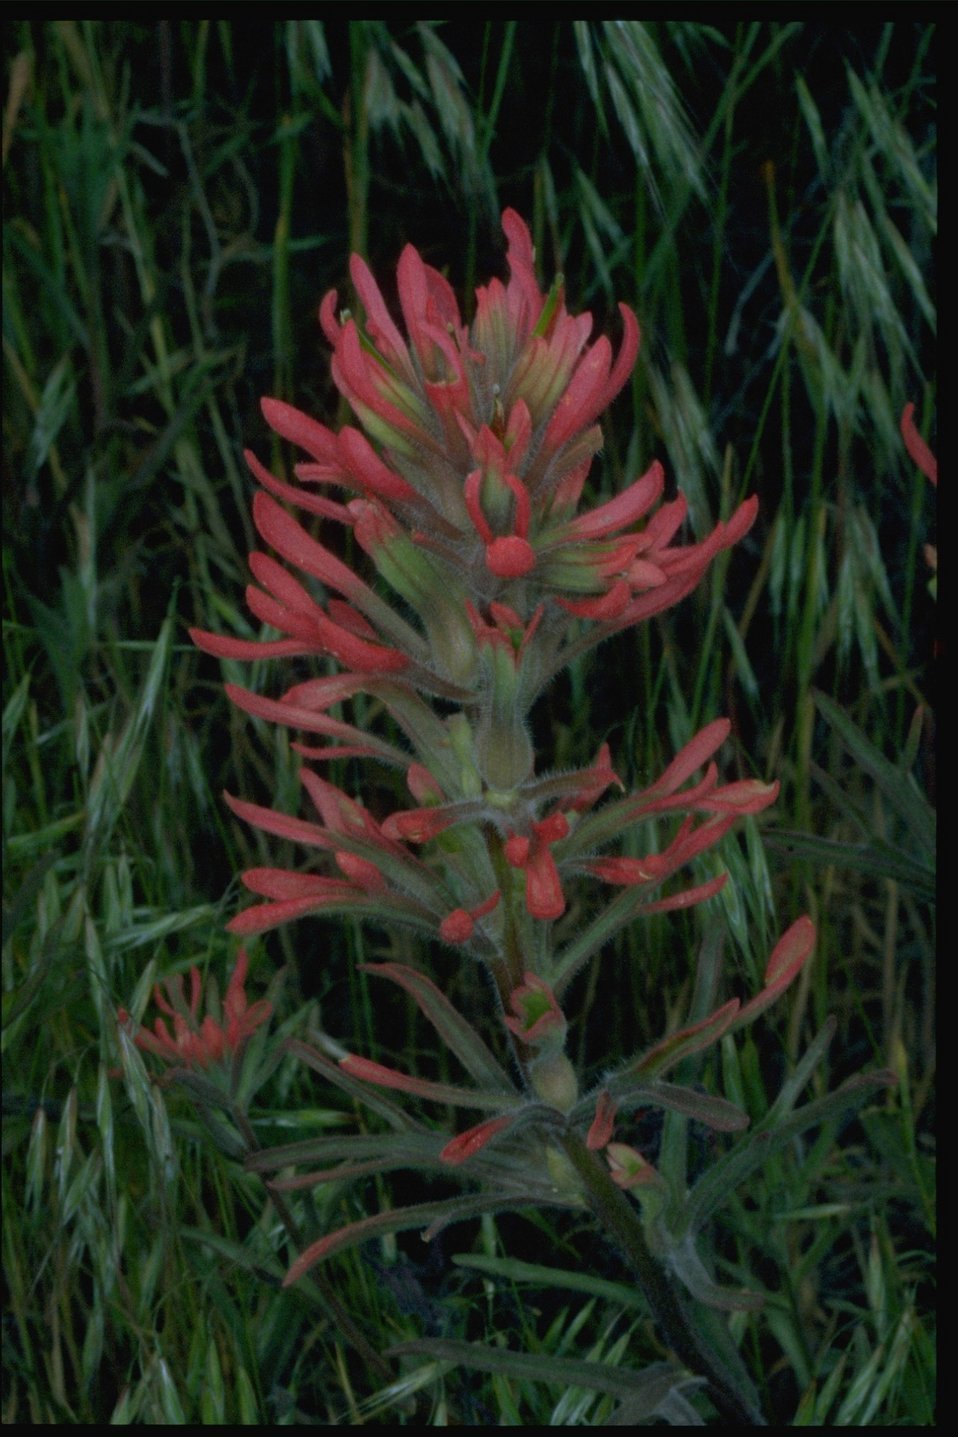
Closeup shot of Indian Paintbrush (Castilleja linariaefolia).